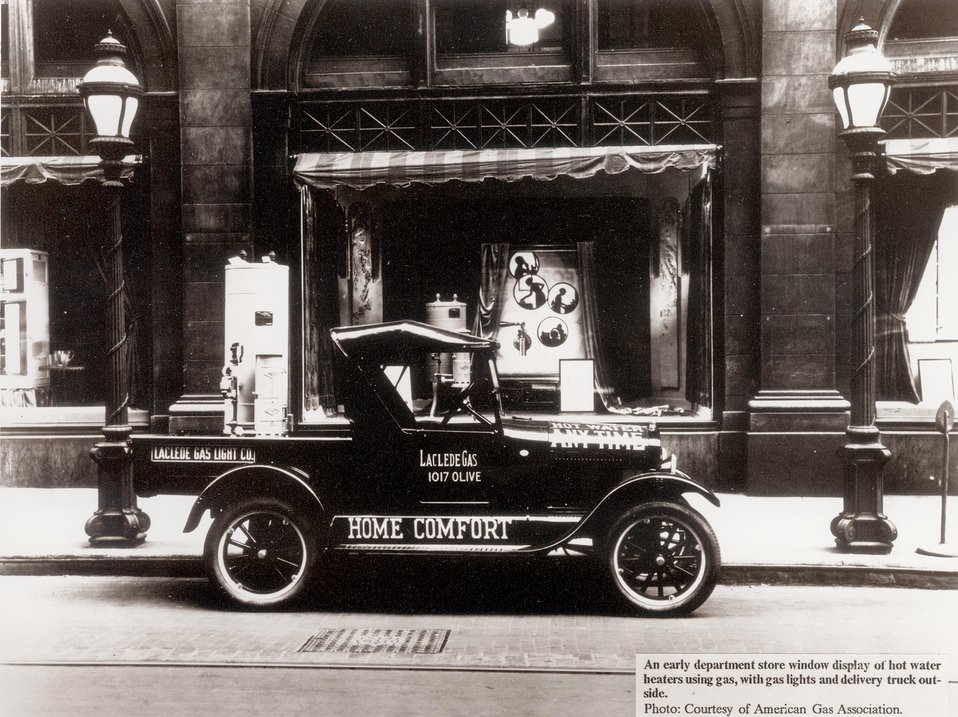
An early department store window display of hot water heaters using gas, with gas lights and delivery truck outside.